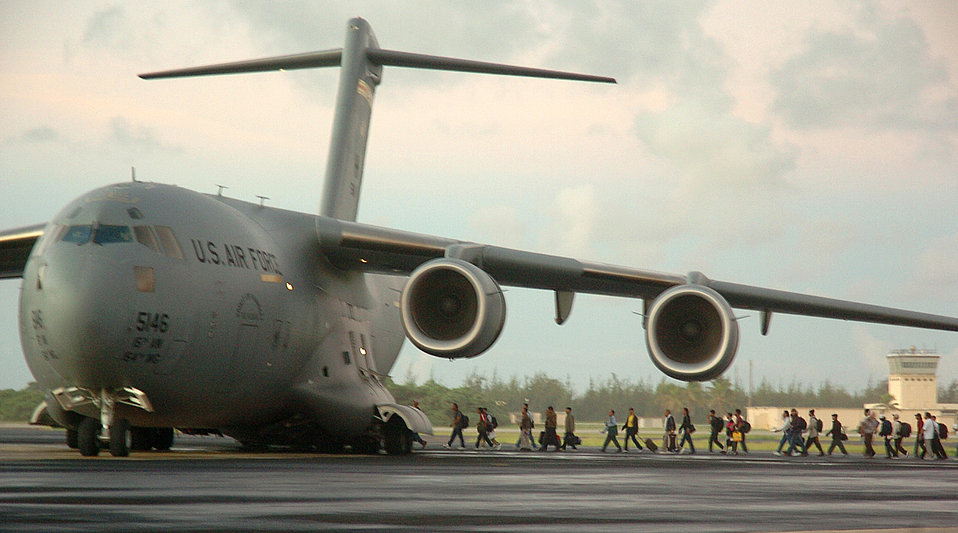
Wake Island evacuates

The second wave of 188 Wake Island evacuees board a C-17 Globemaster III, from Hickam Air Force Base, Monday prior to Super Typhoon Ioke reaching the tiny U.S. territory. Ioke is expected to hit the island around 8.p.m. EDT Wednesday.